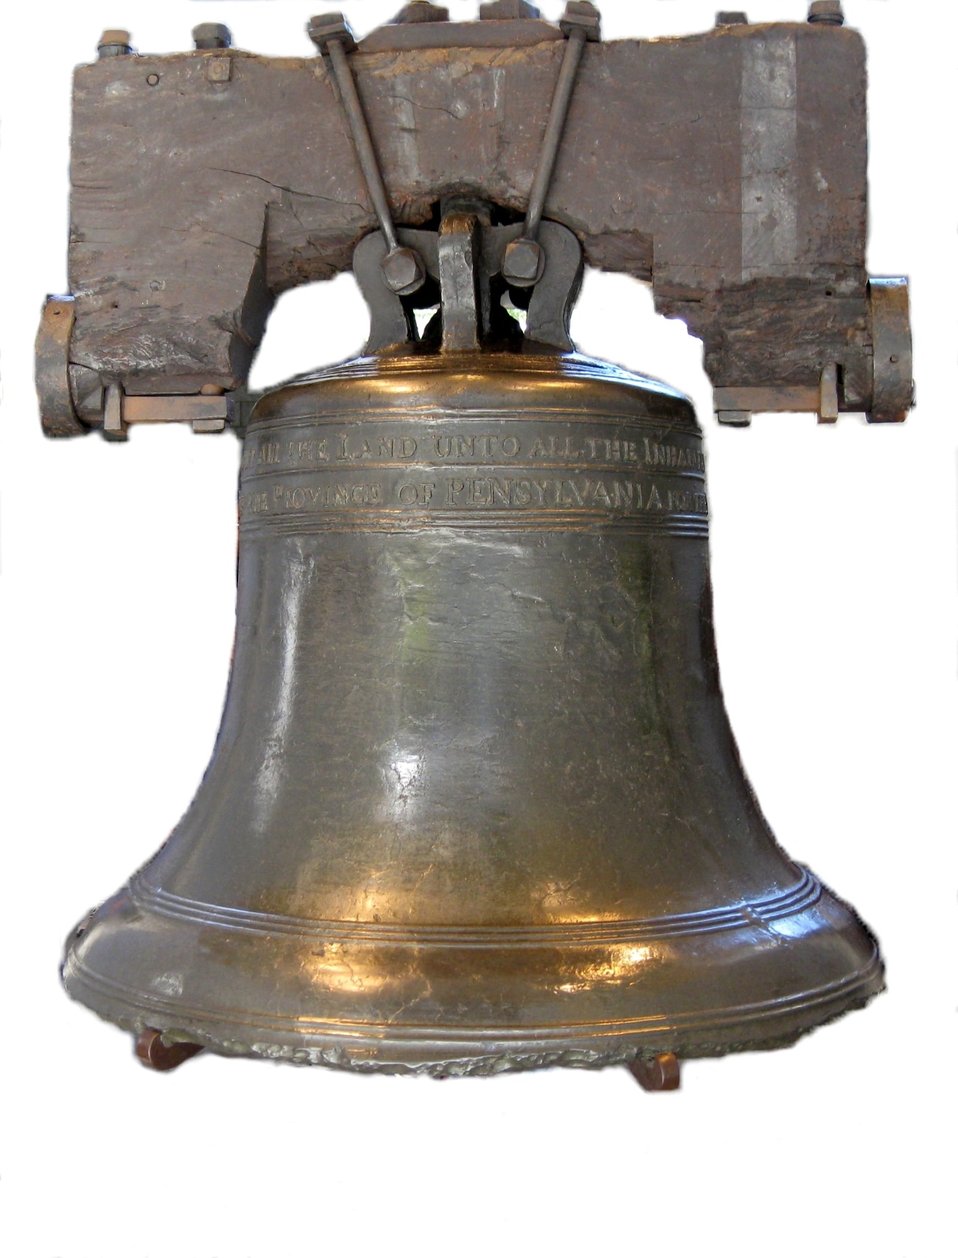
Liberty Bell at Independence National Historic Park.